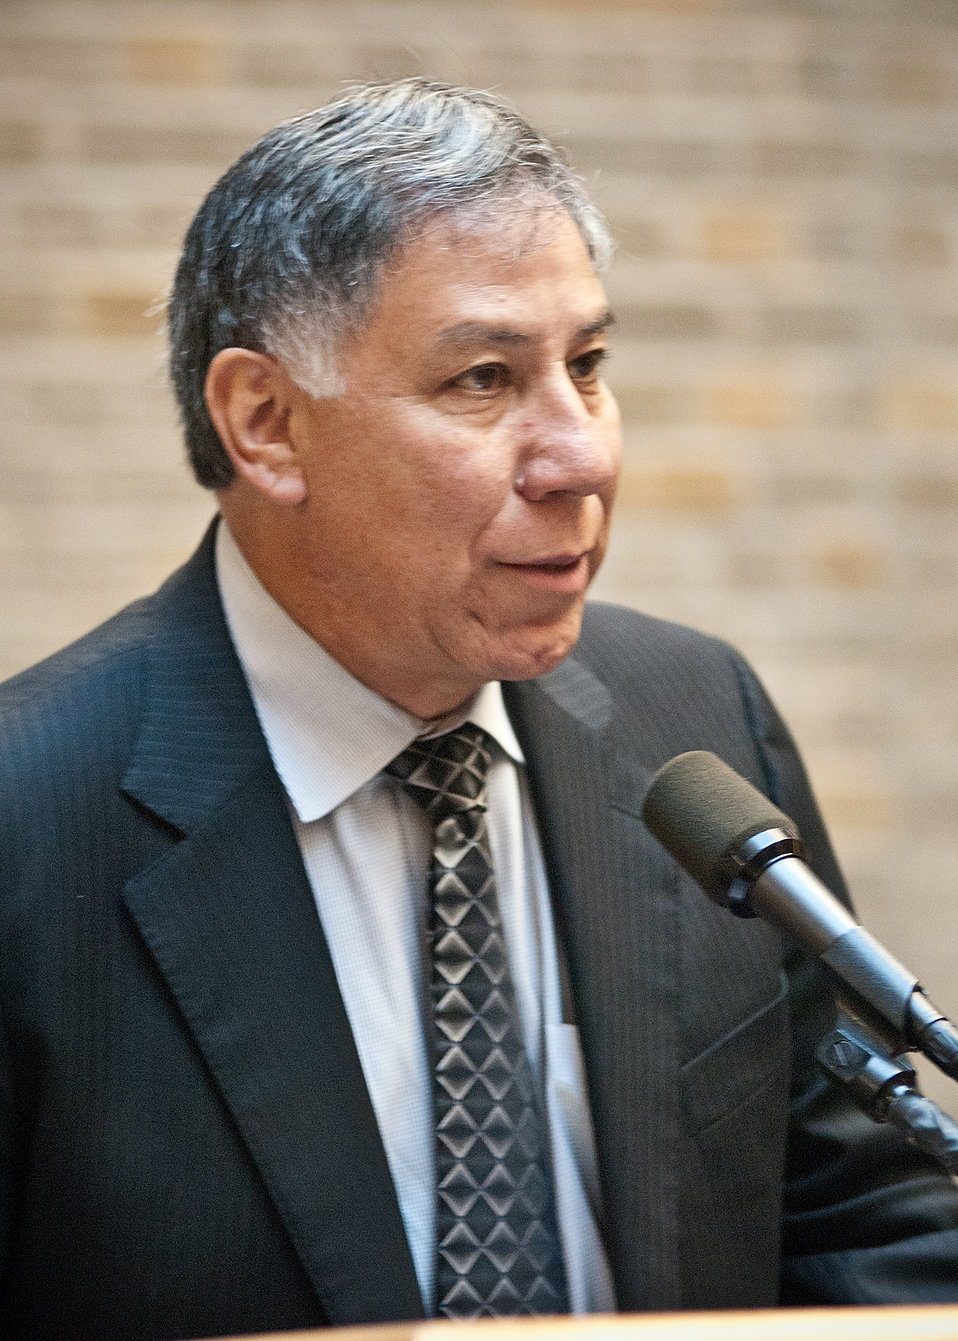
Ed Avalos, Undersecretary, Marketing and Regulatory Programs welcomes U. S. Department of Agriculture employees to the Second Annual Chili Challenge Contest to celebrate Hispanic Heritage Month at USDA in Washington, DC, Thursday, October 6, 2011. Celebrity chefs and USDA employee chef volunteers used chili’s in delicious recipes to celebrate Hispanic cuisine. USDA’s traditional Chili Challenge trophy will be awarded to this year’s best-tasting chili. The judges for the challenge will be Chefs Toni Tipton-Martin, Chef Pedro Matamoros from 8407 Kitchen Bar, Corporate Executive Chef Lance Lemin, Krista Hardin, Chief of Staff Ed Avalos and Undersecretary Avalos.